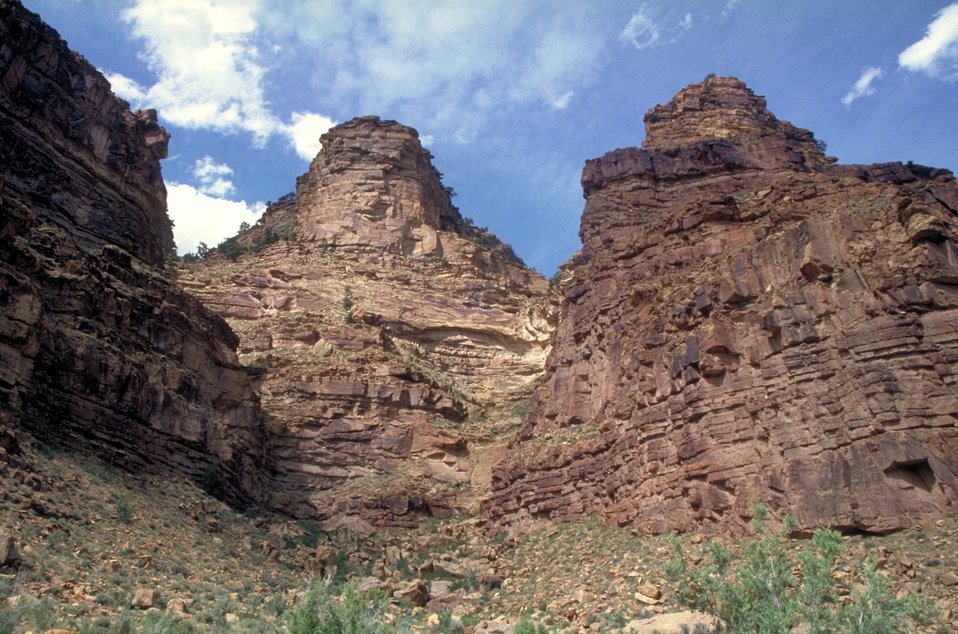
Nine-Mile Canyon near Price, Utah.